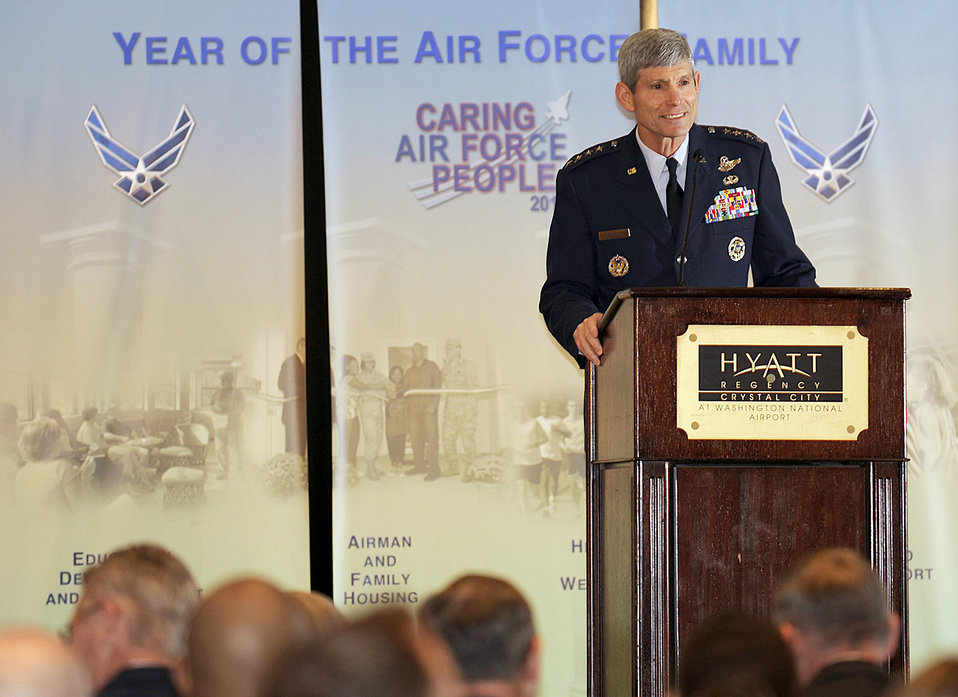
Caring for People

Air Force Chief of Staff Gen. Norton Schwartz addresses attendees April 19, 2010, at the second annual Caring for People forum in Washington, D.C. Approximately 250 active-duty, Guard and Reserve Airmen and civilians gathered to address issues such as deployments, schools and housing, health and wellness, the unique challenges for families with special needs, single Airmen, and Guard and Reserve members.